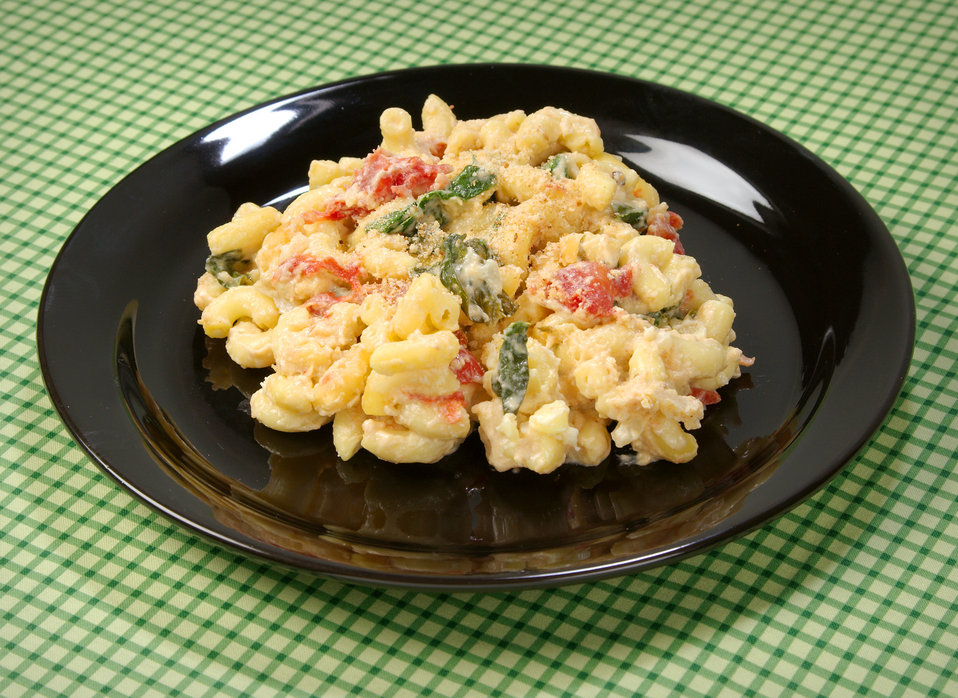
This image depicts a plate of macaroni and cheese. The original recipe used whole milk, butter, and full-fat cheese, a recipe that contained about 540 calories in one serving, which equaled 1 cup.